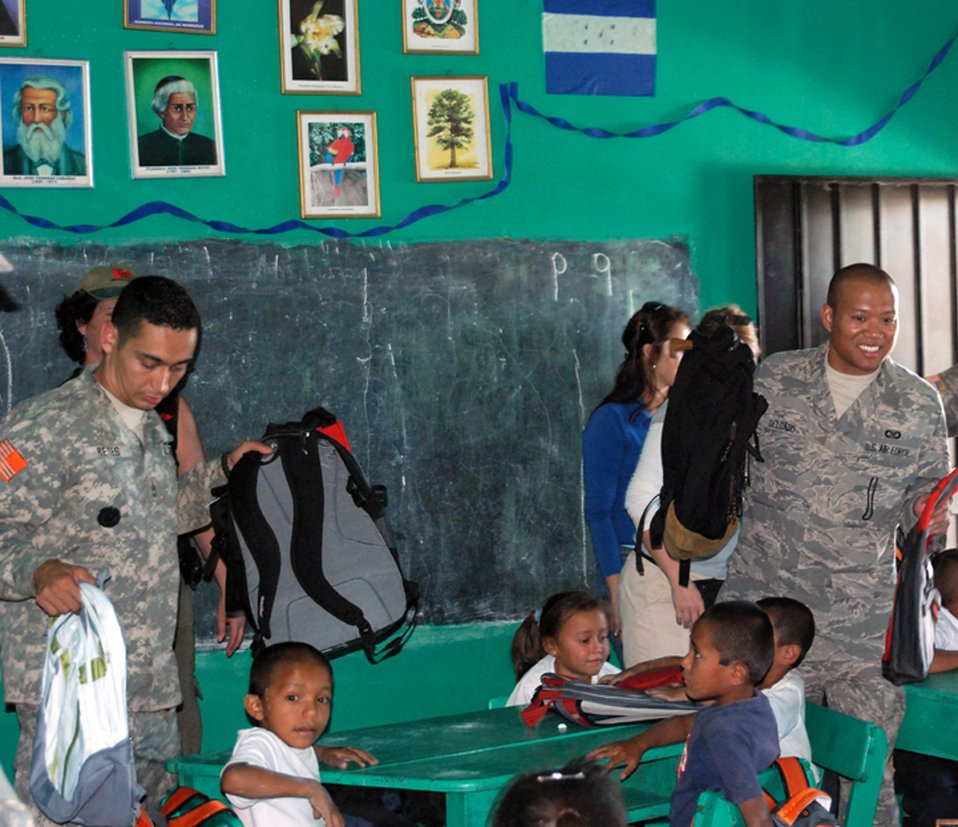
Servicemembers distribute supplies to Honduran school

Army Sgt. 1st Class Julio Reyes and Staff Sgt. Matthew Delgado give backpacks packed with school supplies to children at a school Feb. 21 in Humuya, Honduras. Five representatives from the Give a Kid a Backpack Organization in Florida and 15 volunteers from Joint Task Force-Bravo from Soto Cano Air Base, Honduras, distributed more than 700 backpacks packed with school supplies to children at five schools and two orphanages in the Comayagua and La Paz districts. Sergeant Delgado is a JTF-Bravo Joint Operations Center controller.